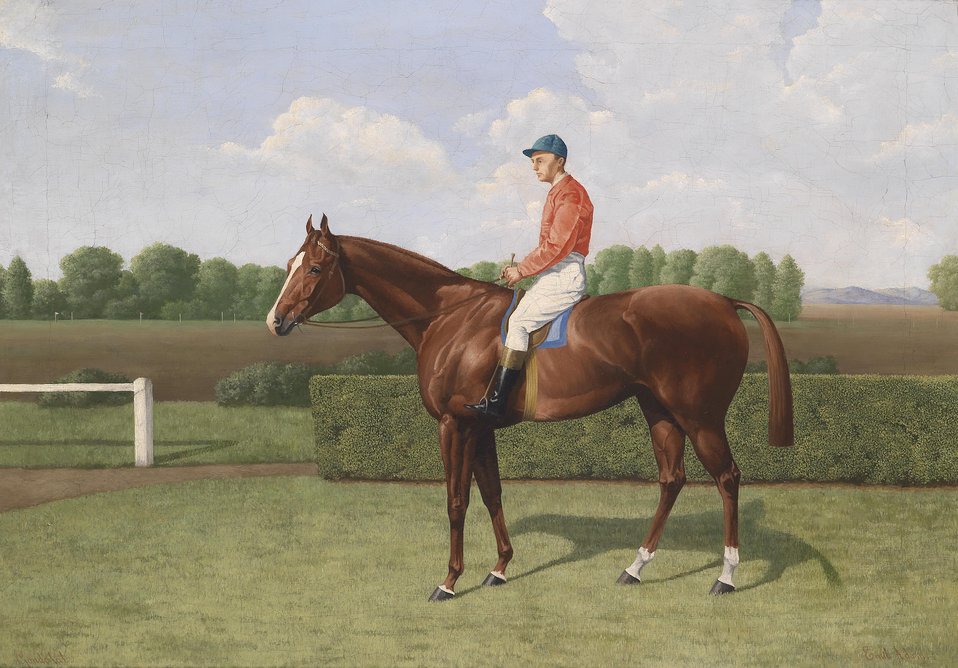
Deutsch: 'Gondolat', signiert, bezeichnet Emil Adam, Öl auf Leinwand, 54 x 76 cm, eventuell die Stute Gondolat aus dem Besitz des Grafen Tassilo Festetics (aktiv 1896/1897)